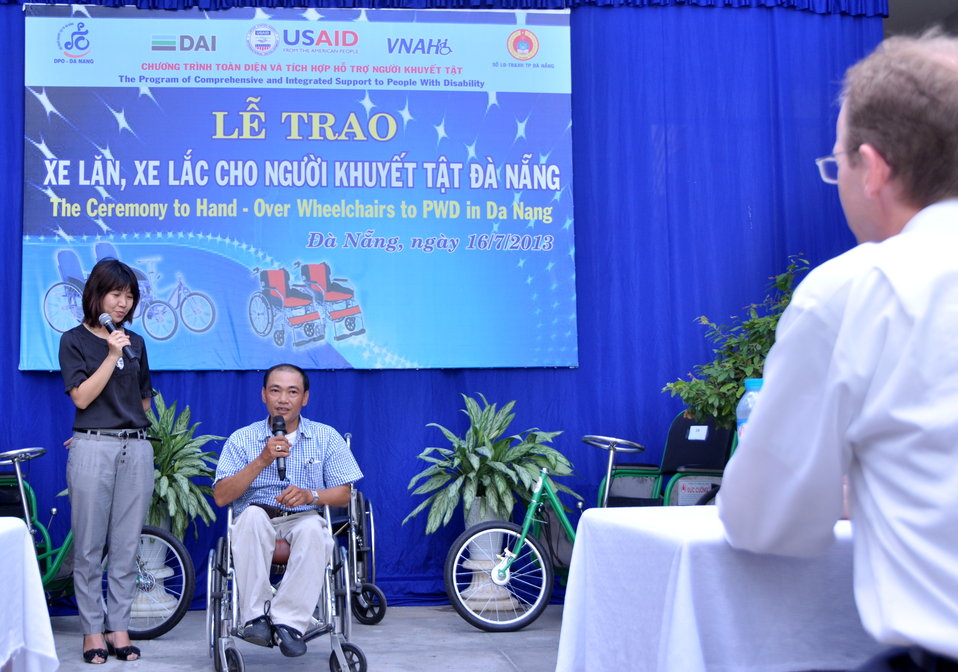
USAID Project Supports Rehabilitation Department for Children and Wheelchair Distribution in Danang

Danang, July 16, 2013